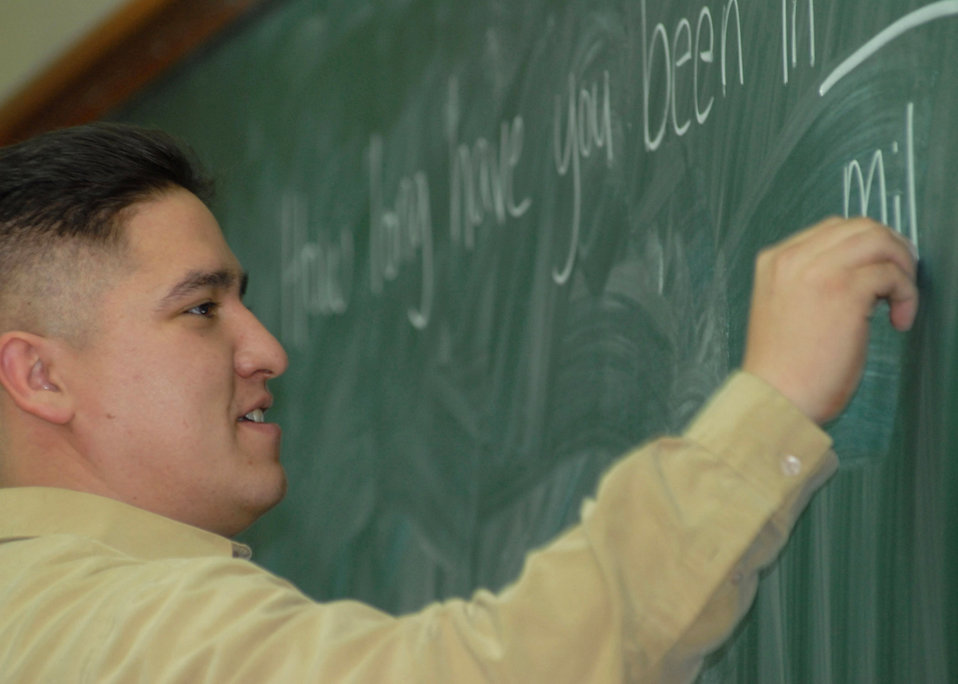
Kunsan Airmen teach English to South Korean cadets

Staff Sgt. Jon Powell writes down common English greetings on the blackboard Jan. 31 at Kunsan Air Base, South Korea. Numerous Airmen from the 5/6 group volunteer to teach assist South Korean army cadets English. Sergeant Powell is the 8th Communications Squadron NCO in charge of visual imagery and intrusion detection systems and wideband maintenance.